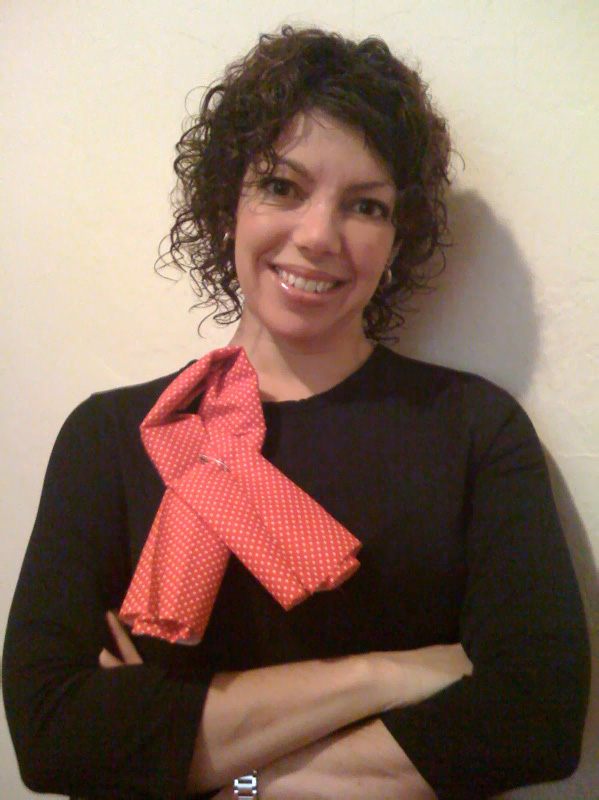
Michelle Samplin-Salgado